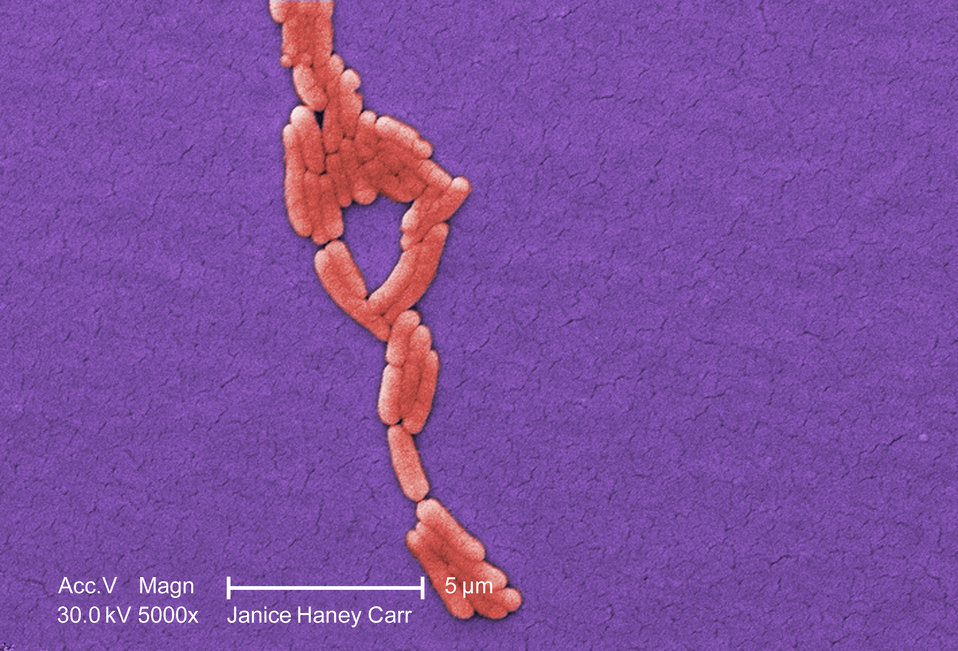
Under a moderate magnification of 5000X, this scanning electron micrograph (SEM) revealed the presence of numbers of clustered Gram-negative Salmonella typhimurium bacteria, that had been isolated from a pure culture. See PHIL 10975 for a colorized version of this image.What sort of germ is Salmonella?